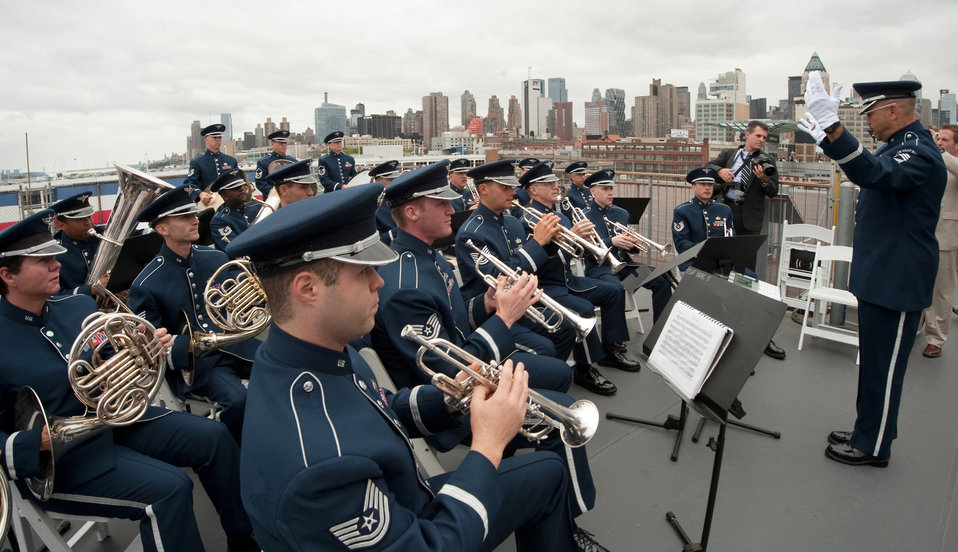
Opening ceremony for Air Force Week

The Air Force Band performs during the Air Force Week New York City proclamation ceremony Aug. 24, 2010, on the flight deck of the USS Intrepid Sea, Air and Space Museum.